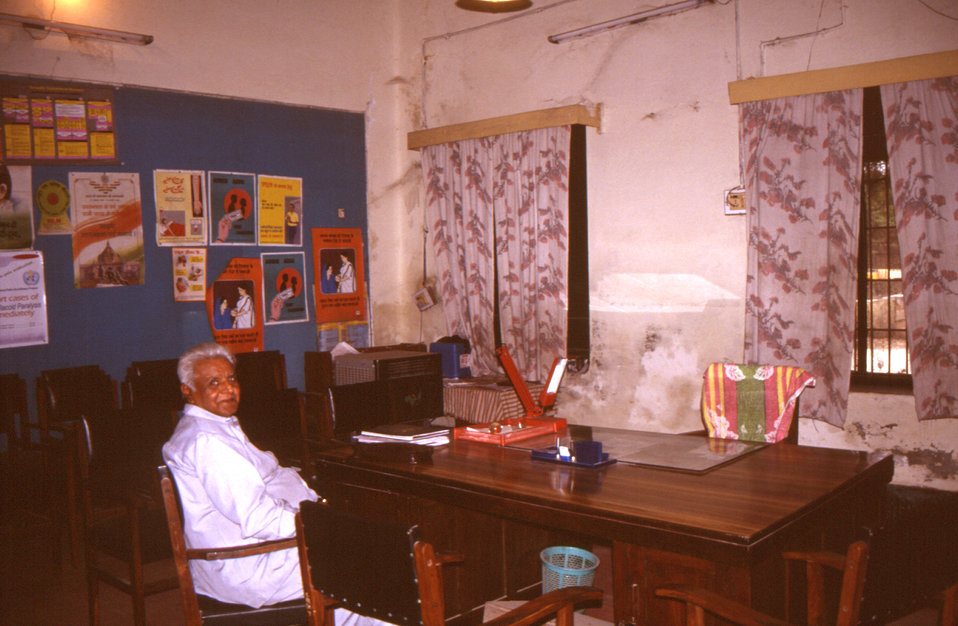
This is a photograph of Dr. G.P. Pandey, a translator for the STOP Transmission of Polio (STOP) Initiative. Dr Pandey was seated while waiting in the district health office to speak with the Medical Officer.STOP assignments require highly qualified public health professionals. The minimum qualification to be considered for a STOP assignment is at least five years of relevant public health work experience. Relevant experience is defined as having worked (school work/internships not included) in one or more of the following areas of public health: communicable disease surveillance (e.g., acute flaccid paralysis surveillance), field epidemiology (e.g., case outbreak investigations), and immunization programs (e.g., developing, implementing, and monitoring programs). Chris Zahniser, B.S.N., R.N., M.P.H., the team member and photographer, was assigned to the state of Uttar Pradesh in northern India, and spent three months working in the Districts of Gorakhpur and Deoria.